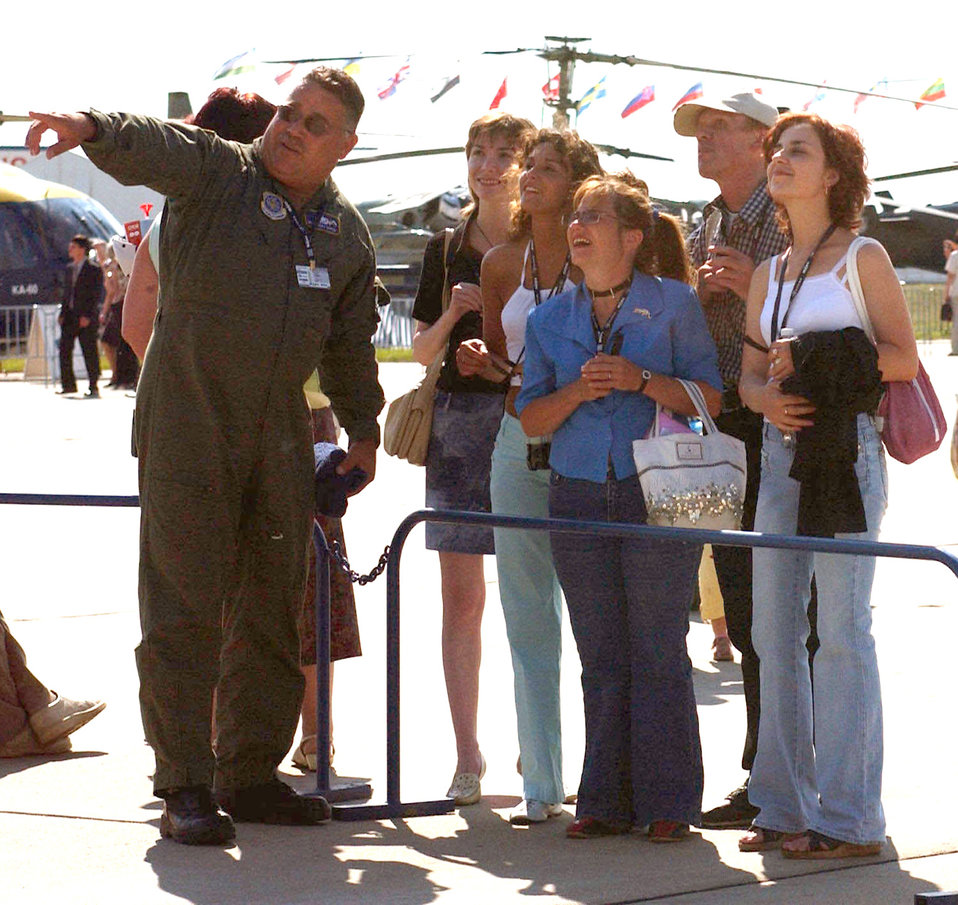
U.S., Russia strengthening ties through Moscow air show

ZHUKOVSKY, Russia -- Master Sgt. Raul Garcia speaks with visitors of the Moscow International Aviation and Space Salon at Ramenskoye Airfield on Aug. 16. Eight Department of Defense aircraft and about 100 servicemembers are playing an active part in the air show Aug. 16 to 21, as they allow visitors to get a close-up look at U.S. Air Force aircraft. Sergeant Garcia is a crew chief from the 749th Aircraft Maintenance Squadron at Travis Air Force Base, Calif.